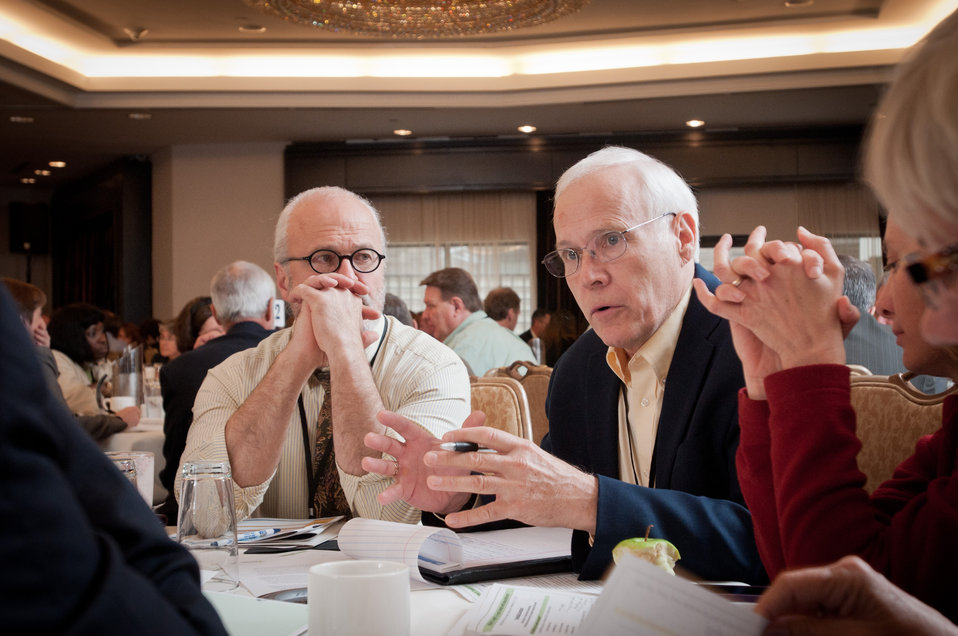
Participants discussed topics that plenary speakers talked about, during the general session of the Rural Wealth Creation and Livelihoods national conference for practitioners, researchers and policymakers, held at the Dupont Hotel, Washington DC, on Monday October 3, 2011. USDA partnered with the Ford Foundation to sponsor the conference.